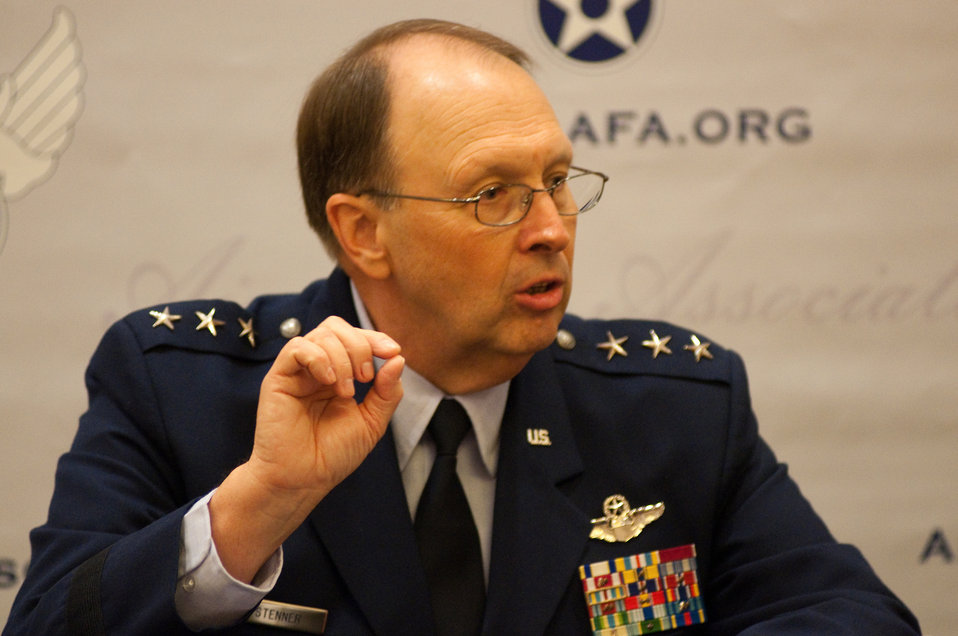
General Stenner at AFA

Lt. Gen. Charles E. Stenner Jr., the commander of the Air Force Reserve Command and chief of the Air Force Reserve, speaks to a standing-room only crowd about military structure for the 21st century Sept. 13, 2010, during the Air Force Association Air & Space Conference and Technology Exposition 2010 at National Harbor in Oxon Hill, Md.